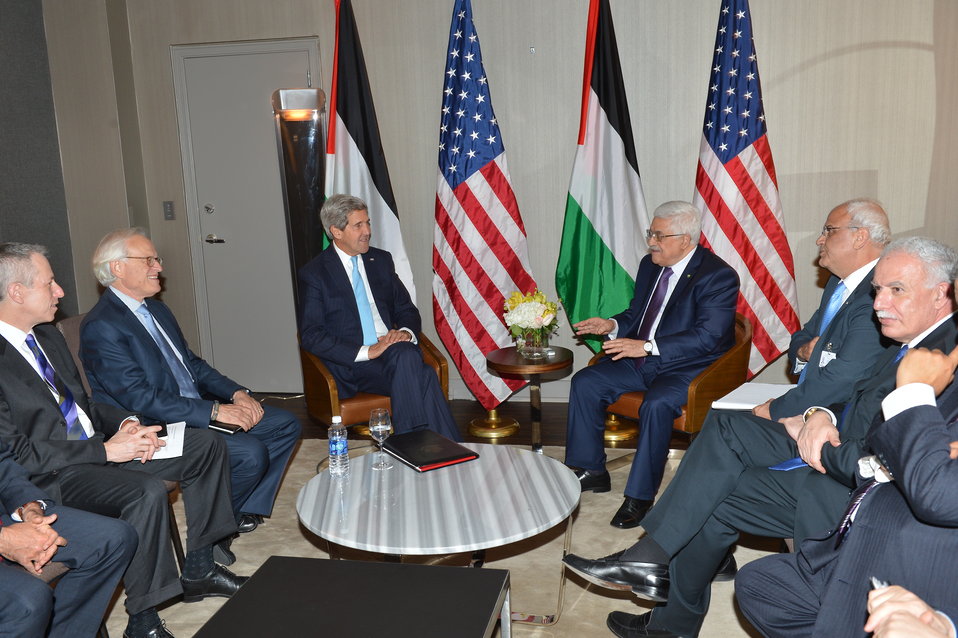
Secretary Kerry Meets With President Abbas

U.S. Secretary of State John Kerry meets with Palestinian Authority President Mahmoud Abbas in New York City on September 24, 2013.